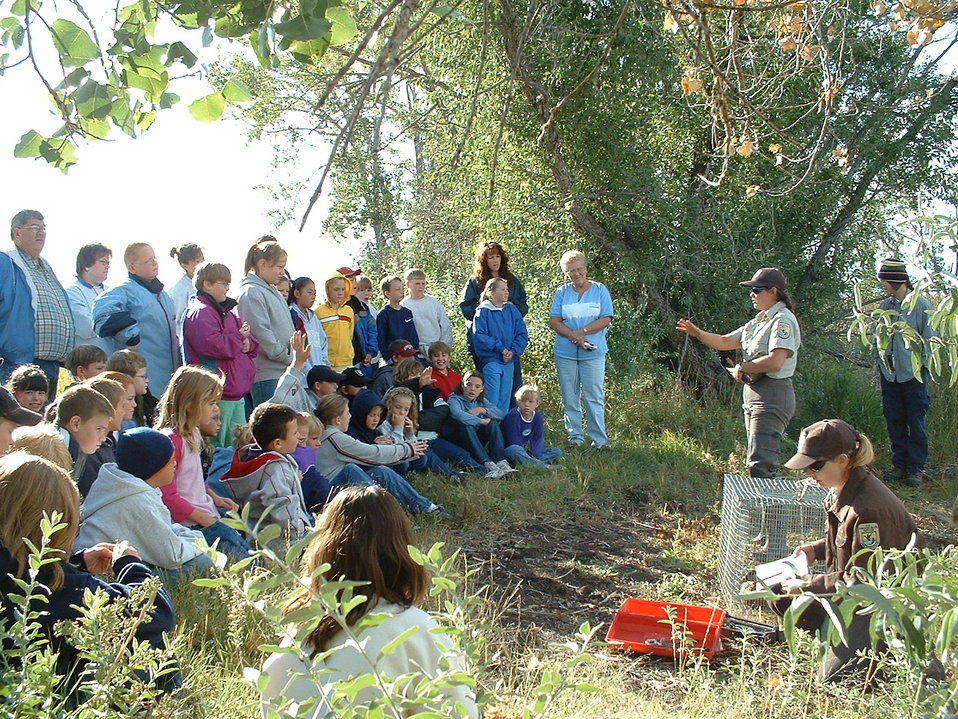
Environmental Ed at Bowdoin NWR